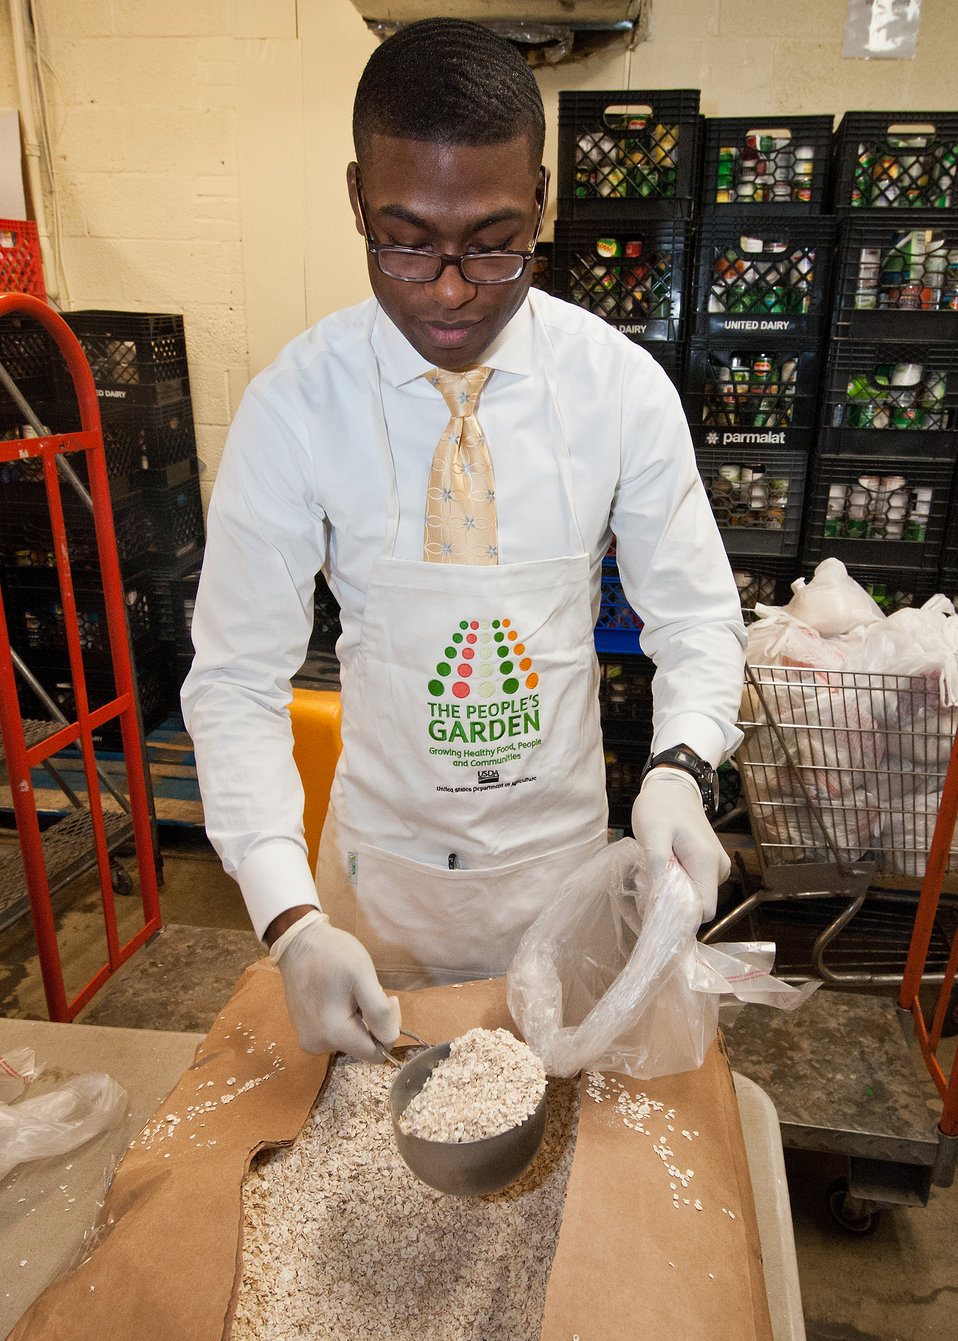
Johnie Jones, Special Assistant to Deputy Agriculture Secretary Dr. Kathleen Merrigan fills bags with oatmeal purchased in bulk to be distributed by the Arlington Food Assistance Center in Arlington, Virginia, on Thursday, January 12, 2012. Agriculture Secretary Tom Vilsack designated January 12 as the United States Department of Agriculture’s Martin Luther King Day of Service to recognize Dr. King’s contributions to the Civil Rights Movement. The AFAC is Arlington, Virginia’s food pantry providing supplemental and nutritious food free of charge to Arlington families who cannot afford to purchase all the food they need. The center receives United States Department of Agriculture foods through The Emergency Food Assistance Program (TEFAP) administered by the USDA Food and Nutrition Service from the Capital Area Food Bank.